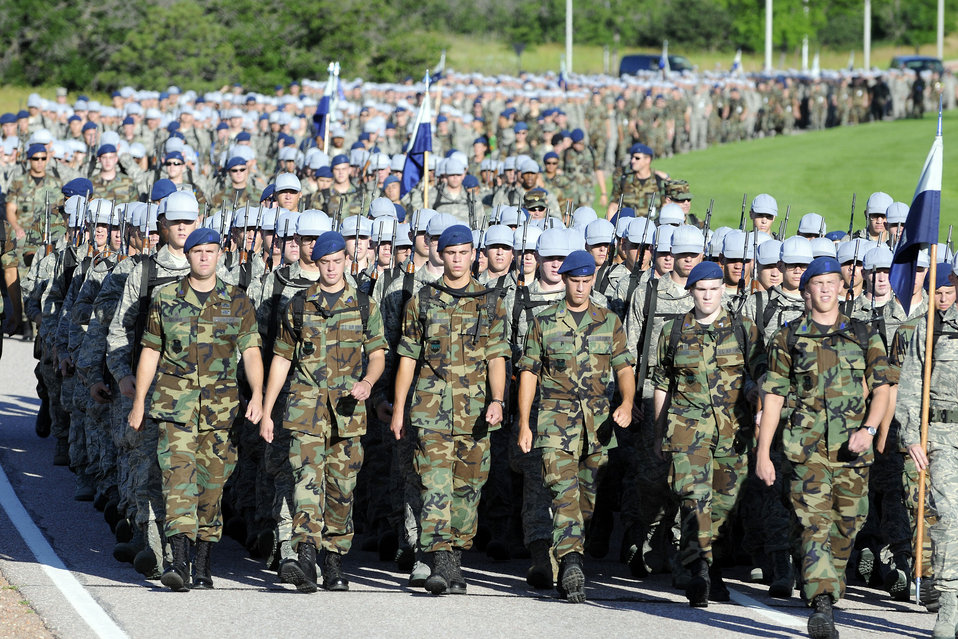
New cadets discover Jacks Valley

Ready to begin the field training portion of basic training, more than 1,300 U.S. Air Force Academy basic cadets march out to the Jacks Valley training area near Colorado Springs, Colo., July 13.